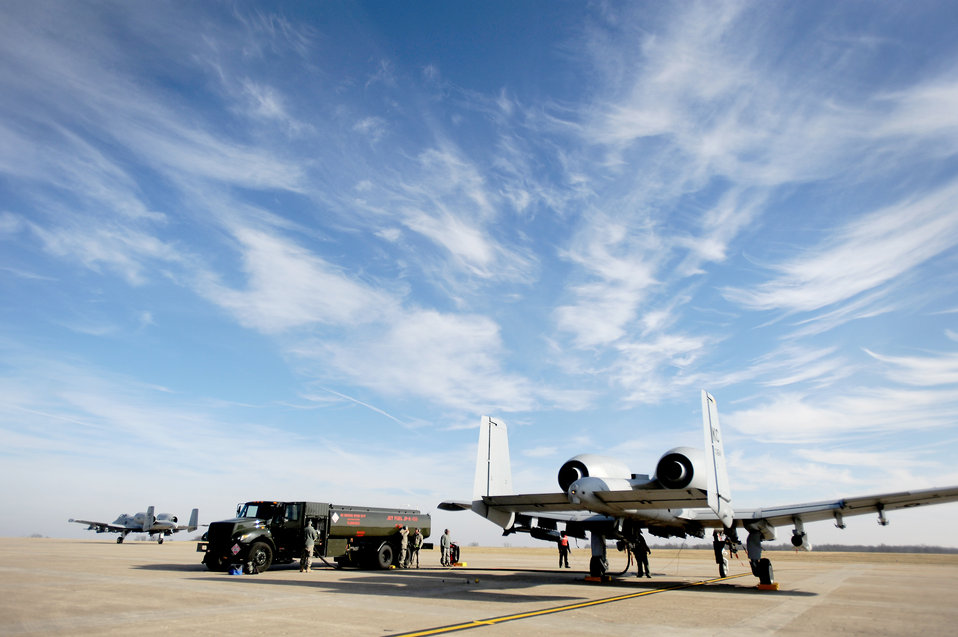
Hot pit refueling

Air reserve technicians with the 442nd Fighter Wing and fuel operators with the 509th Logistics Readiness Squadron work together to conduct hot pit refuels for A-10 Thunderbolt II pilots Dec. 8, 2010, at Whiteman Air Force Base, Mo. Hot pit refueling is a procedure usually performed in a combat situation to rapidly refuel aircraft while engines are running to thrust pilots back into the fight.